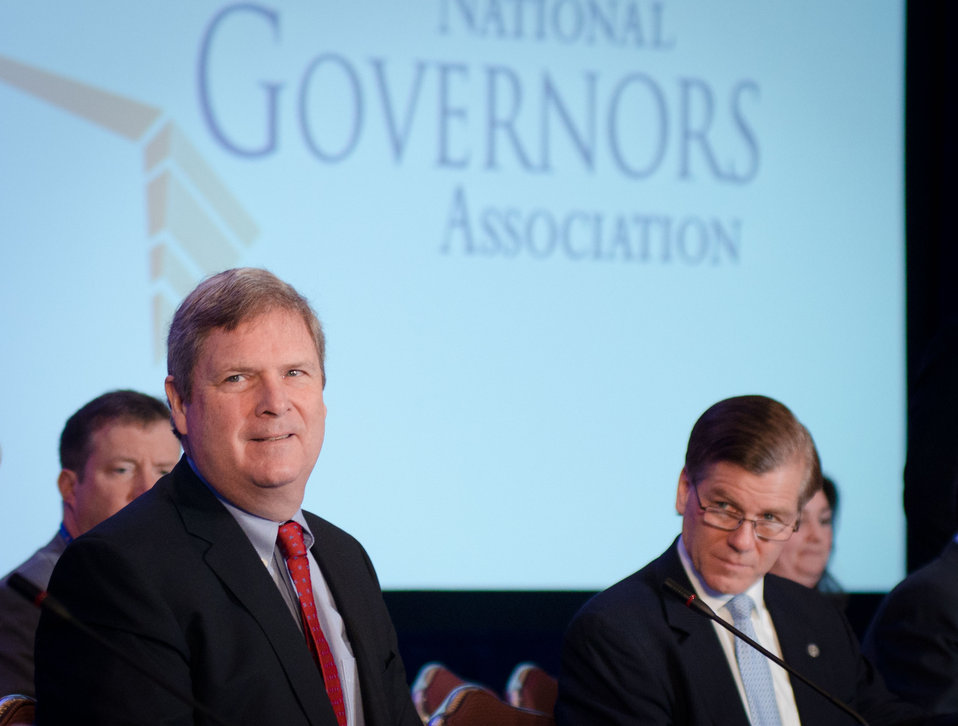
Agriculture Secretary Tom Vilsack (left) and Governor Bob McDonald (right) listen to opening remarks at the National Governors Association Education, Early Childhood and Workforce Committee meeting in Washington, D.C., on Sunday, February 26, 2012.